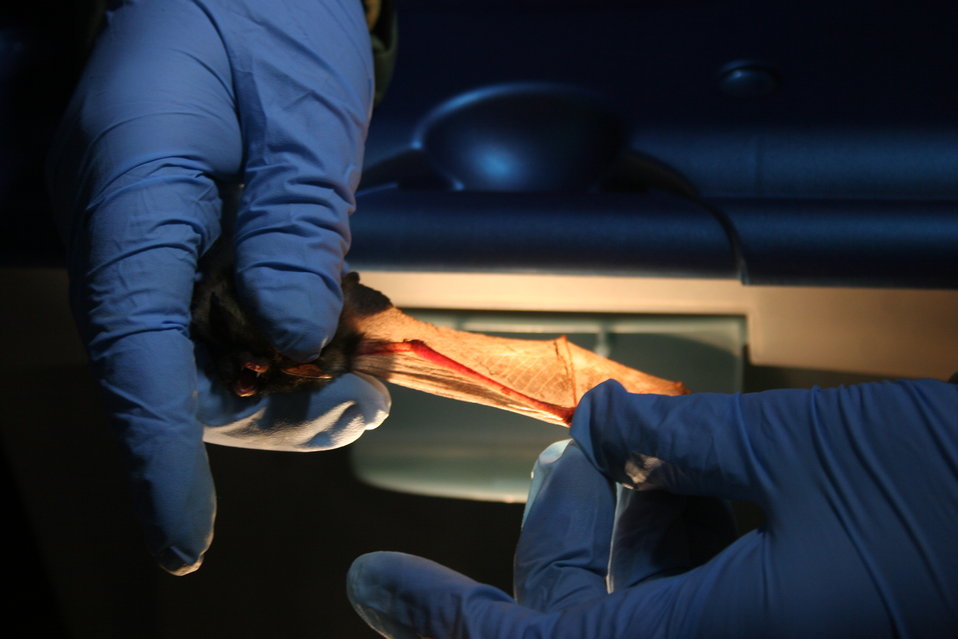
Biologist inspects bat wing

Biologist inspecting wing of bat